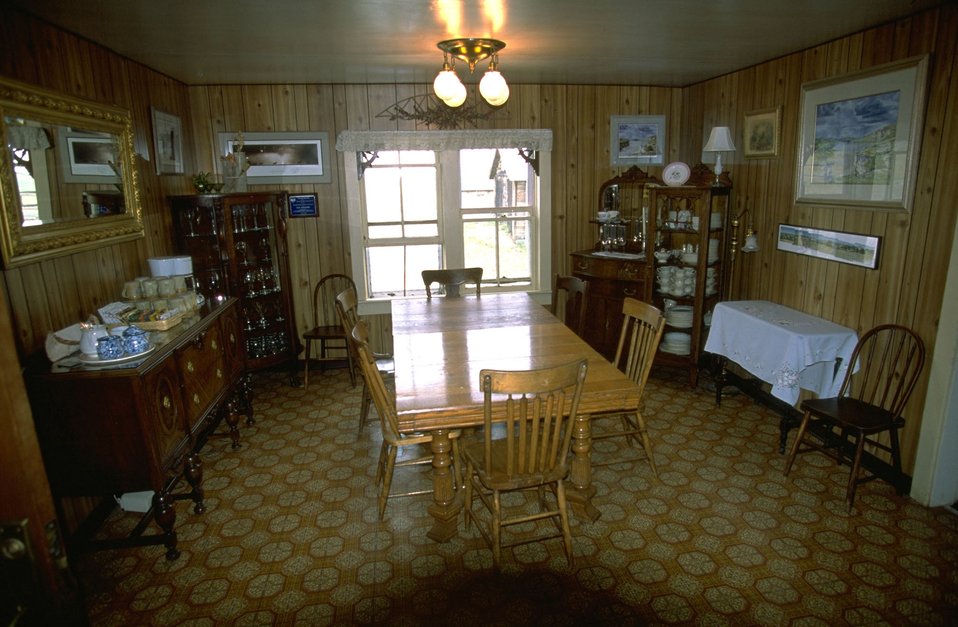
Virgelle Merchantile near Loma